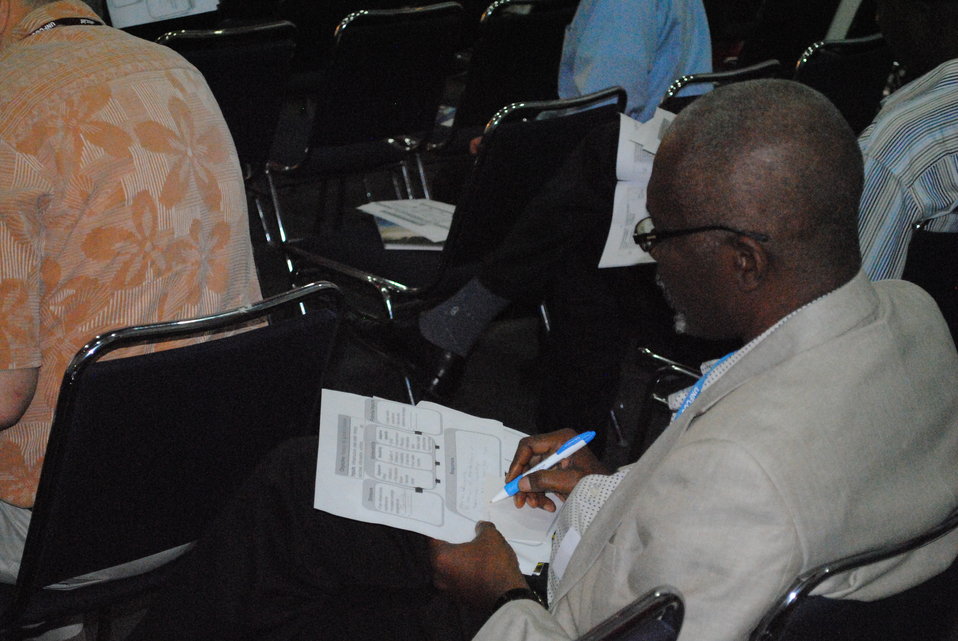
Observers Take Notes at a U.S. Center Side Event

Observers take notes at the side event, 'Stakeholder Driven Approach to Adaptation -- East Caribbean,' at the U.S. Center at COP-16 in Cancun, Mexico, on November 30, 2010.